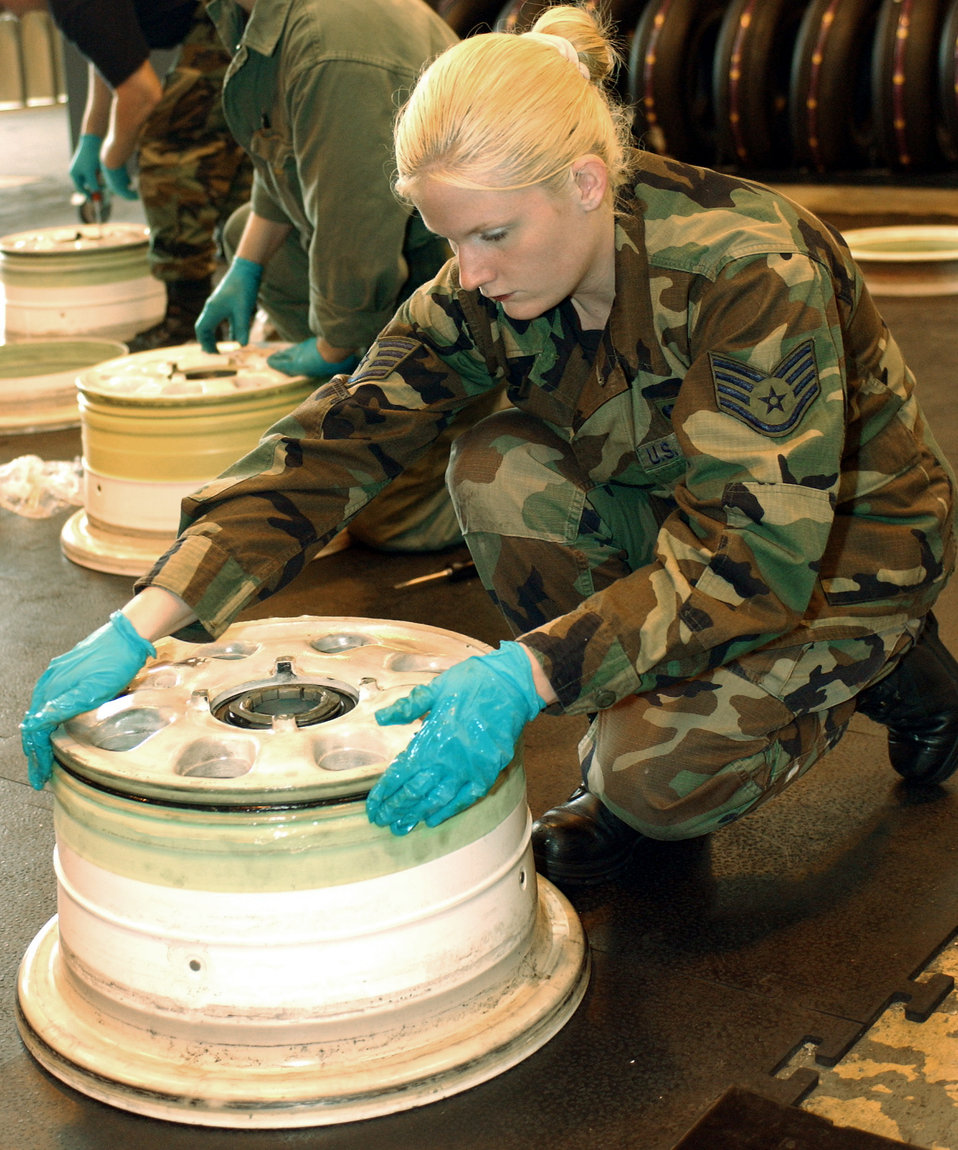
It's tough to retire!

ROYAL AIR FORCE LAKENHEATH, England -- Staff Sgt. Jessica Oviedo works on an F-15 Eagle main wheel assembly at the wheel and tire shop here April 13. Sergeant Oviedo is a crew chief assigned to the 48th Equipment Maintenance Squadron.